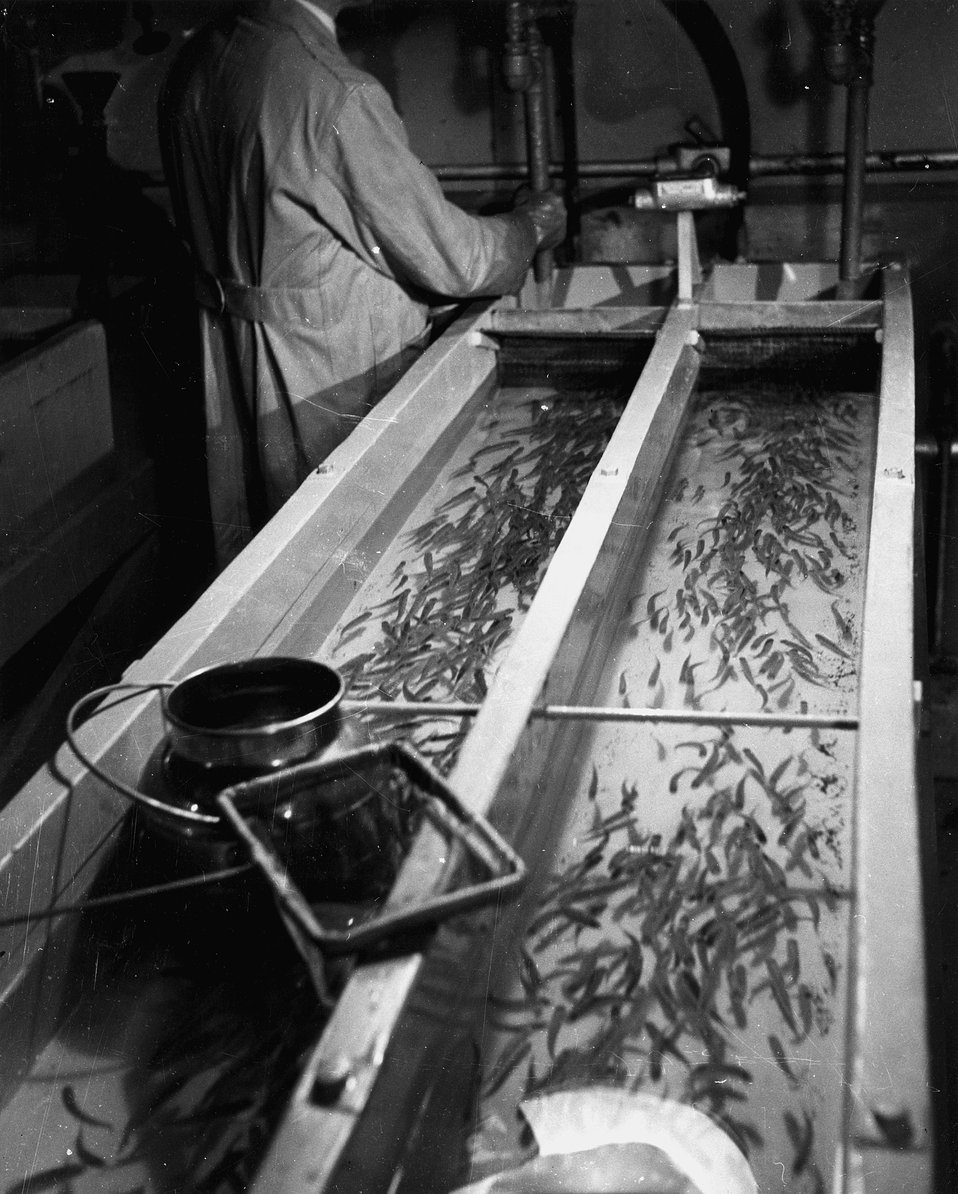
Since Columbia River water used to cool the plutonium-producing reactors at AEC's Hanford Works, near Richland, Washington, becomes radioactive, scientists of the Biology Division are studying effects of Radioactivity on fish. c. 1953